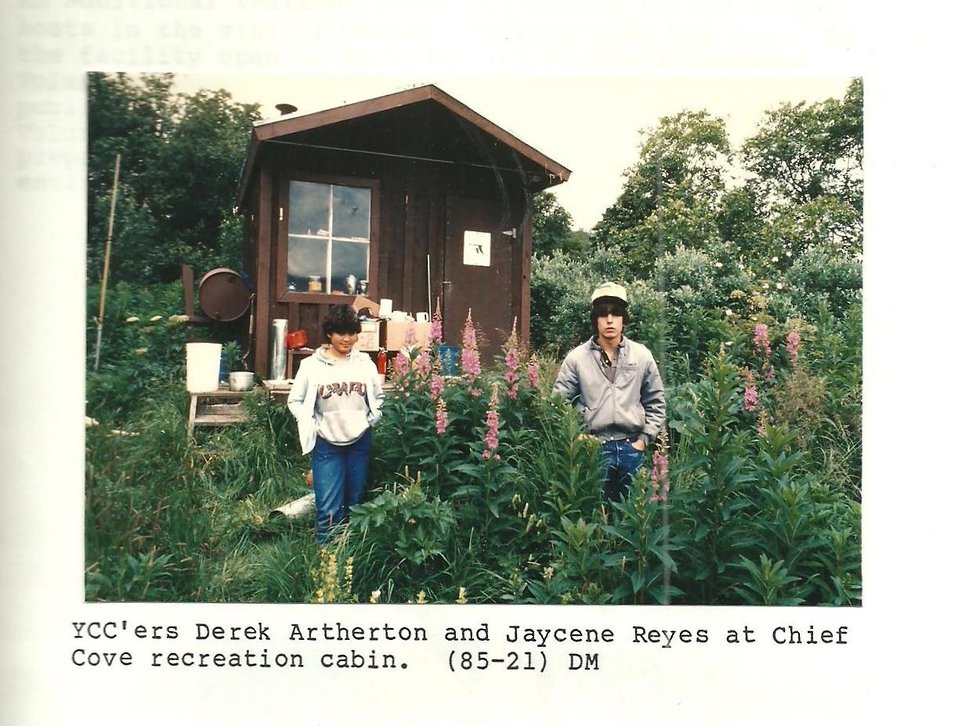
(1985) YCC Participants

Credit: USFWS

Source and Contact: Kodiak National Wildlife Refuge